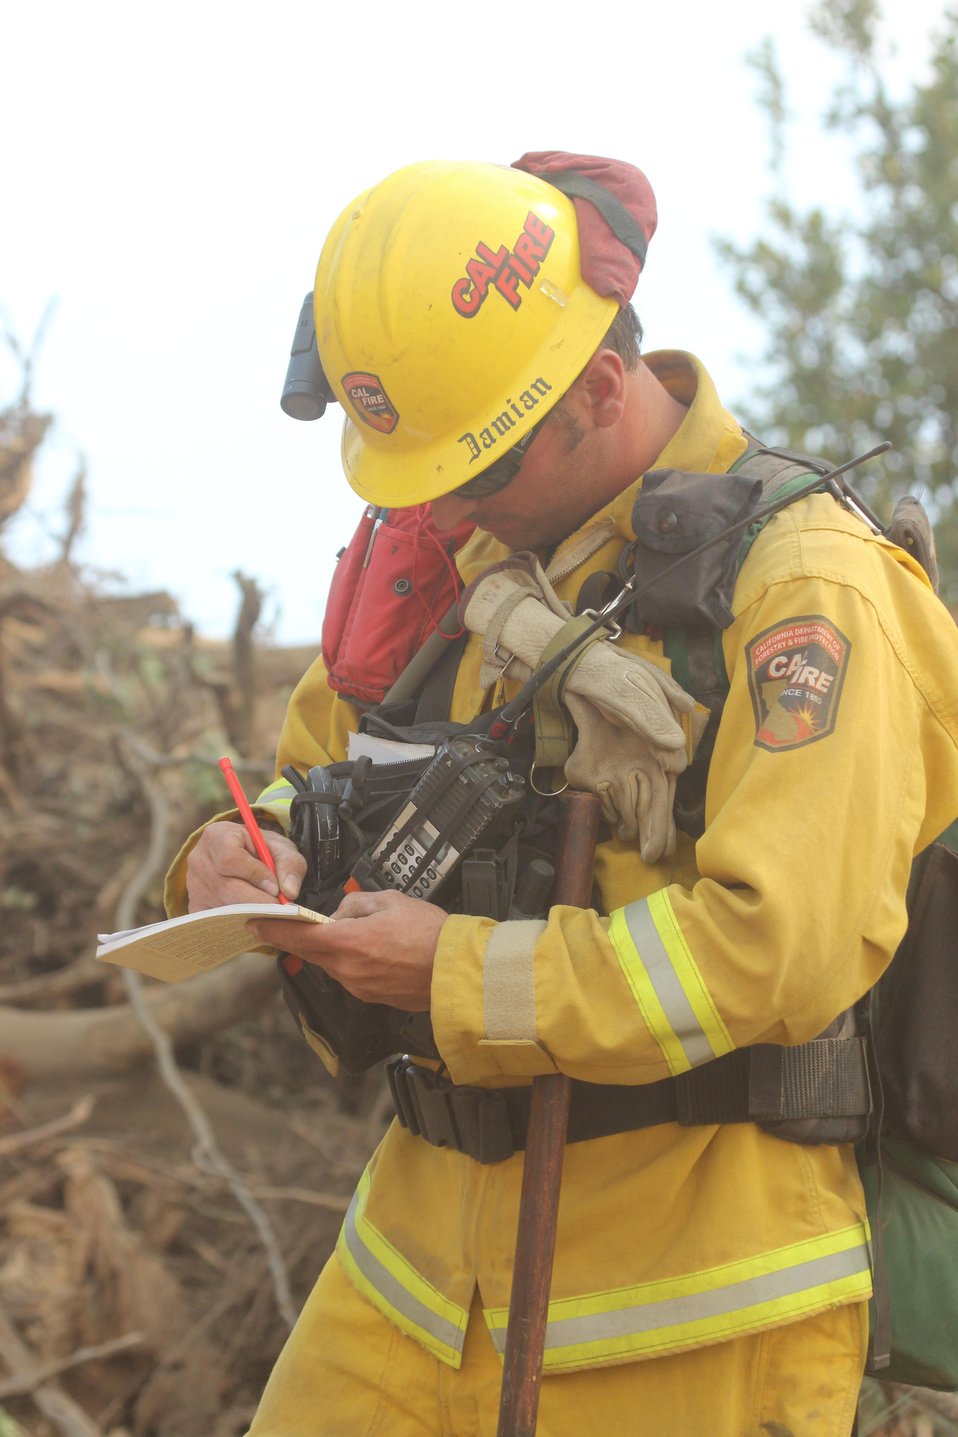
Firefighter records weather data at Rim Fire. The Rim Fire in the Stanislaus National Forest near in California began on Aug. 17, 2013 and is under investigation. The fire has consumed approximately 235,841 acres and is 70% contained.